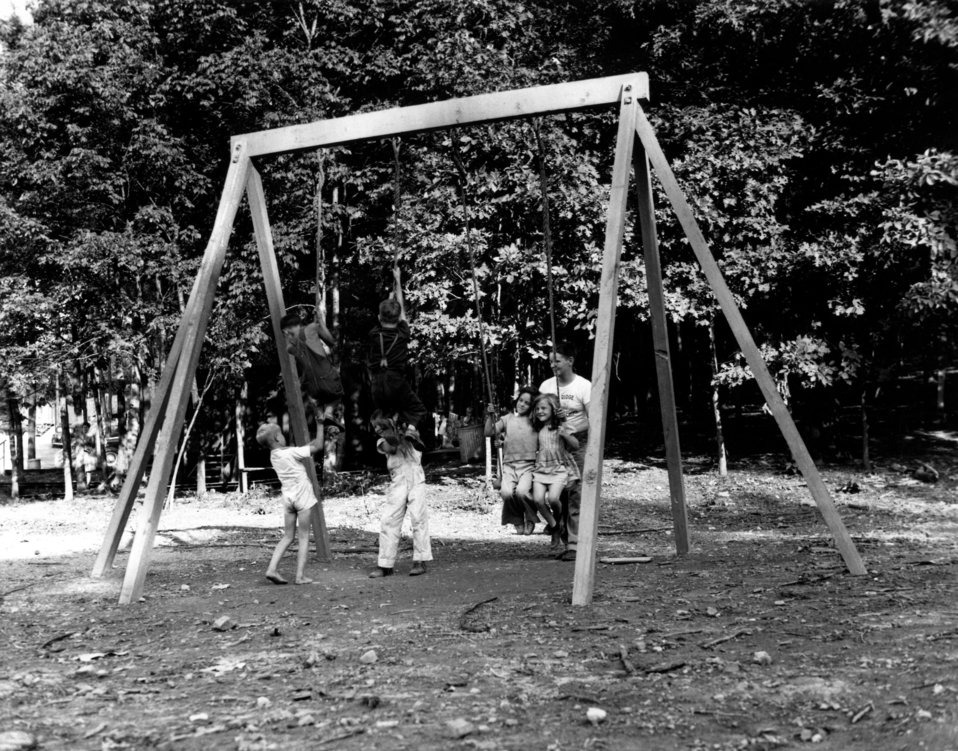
Daily Life at Oak Ridge